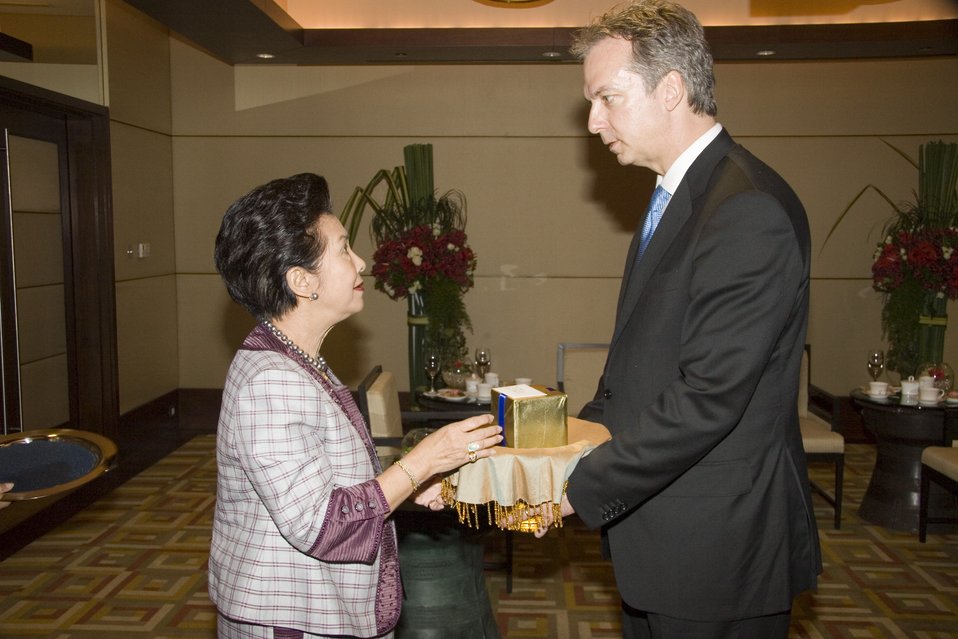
U.S. Ambassador to Thailand Meets With Thai Queen’s Lady-in-Waiting

U.S. Ambassador to Thailand Eric G. John presents a gift to the Queen’s Lady-in-Waiting, Thanpuying Nravadi Chaixanien, at the Conrad Hotel in Bangkok, Thailand July 21, 2009.